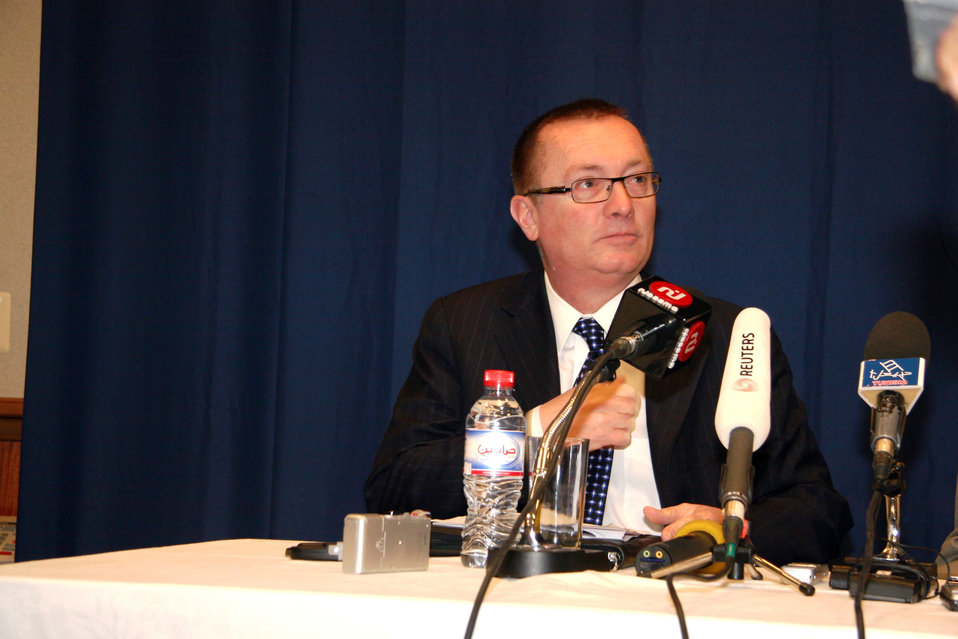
Assistant Secretary Feltman Meets With Reporters

U.S. Assistant Secretary of State for Near Eastern Affairs Jeffrey Feltman meets with local reporters in Tunis, Tunisia, on January 26, 2011, to discuss his visit there.